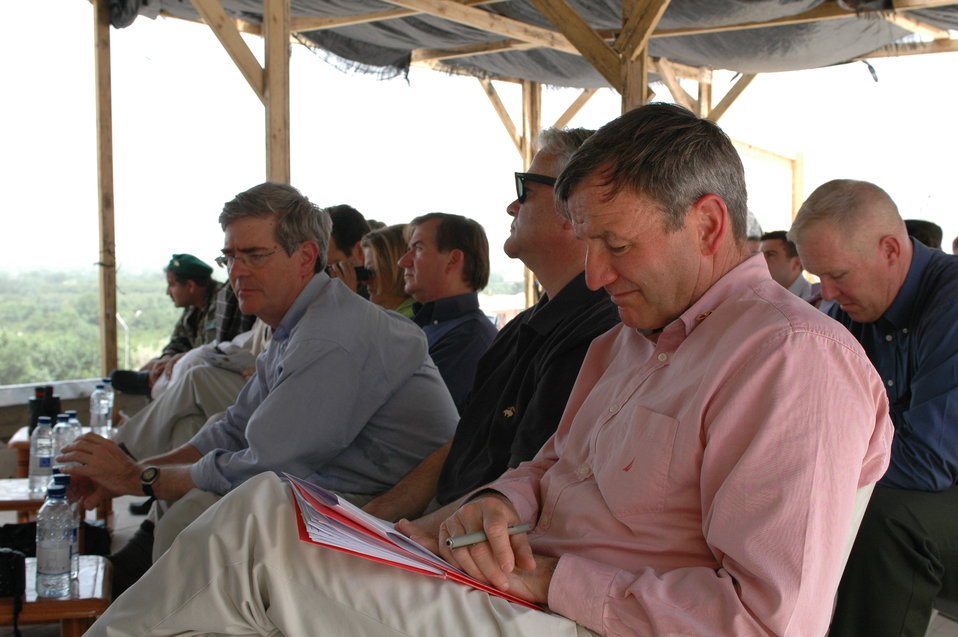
CODEL Berman